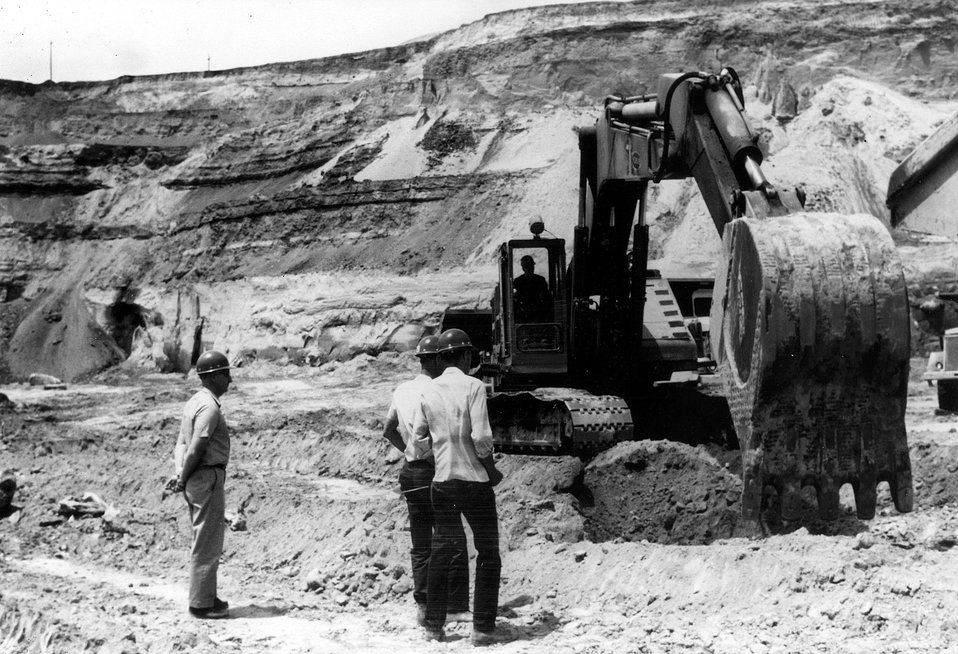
Uranium is found mostly in deposits of uraninite, coffinite, and brilliantly colored minerals irregularly disseminated in sand stones of the Western States. c. 1971